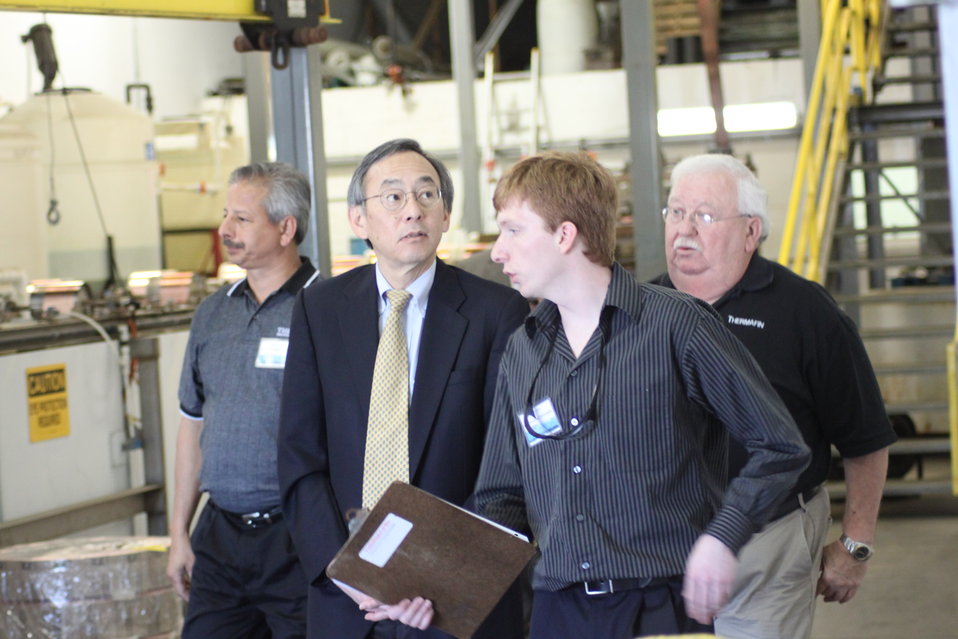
Norm 019